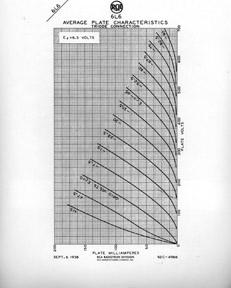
A picture of the plate characteristics of a tripod connected 6L6 vacuum tube. c. 1949